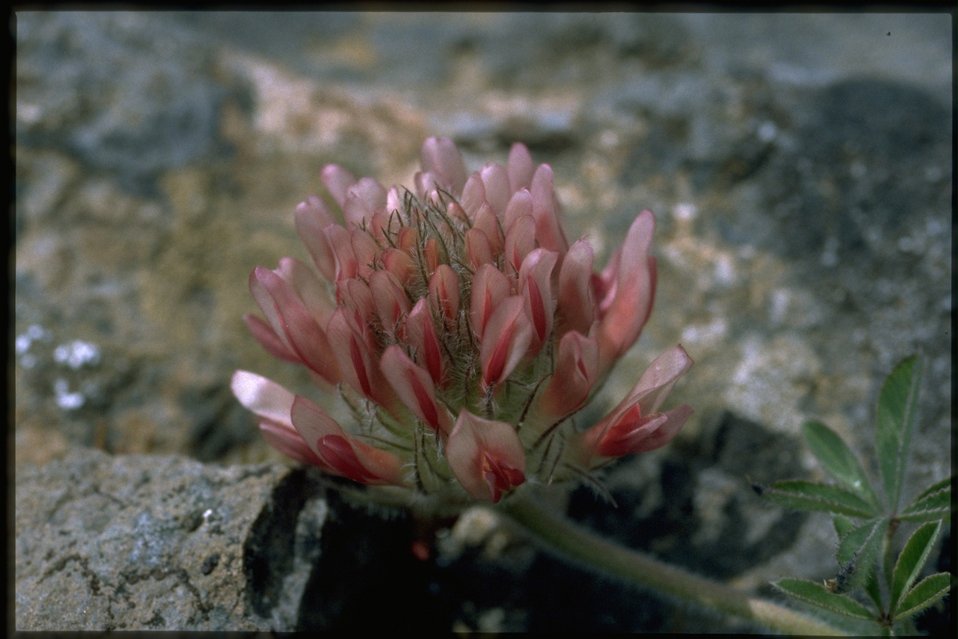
Closeup shot of Big-headed clover, Trifolium macrocephalum.